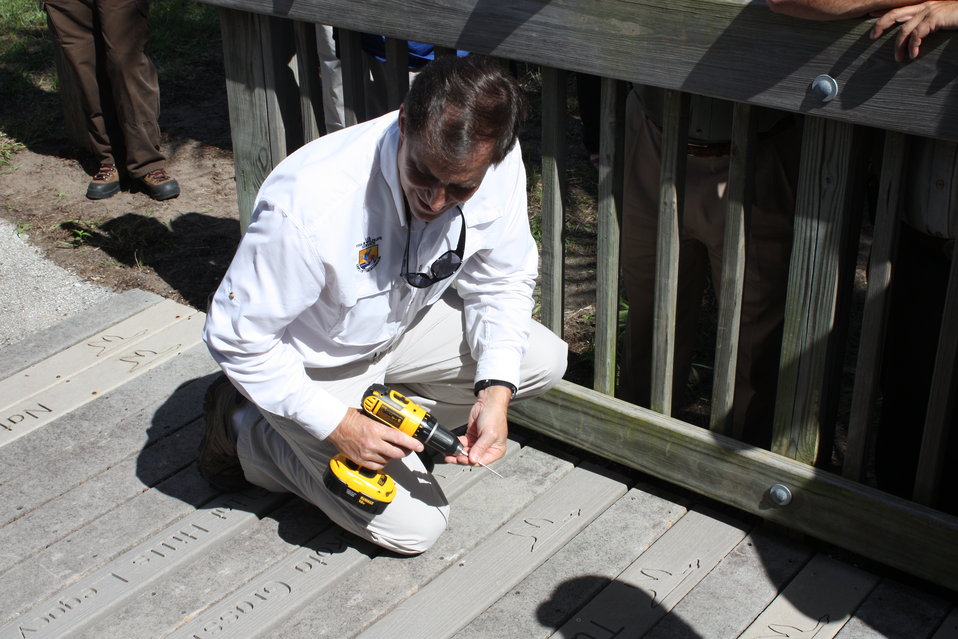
Director Dan Ashe places plank

U.S. Fish and Wildlife Service Director Dan Ashe places planks to commemorate one of the four new refuges on the Centennial Trail Boardwalk at Pelican Island National Wildlife Refuge.